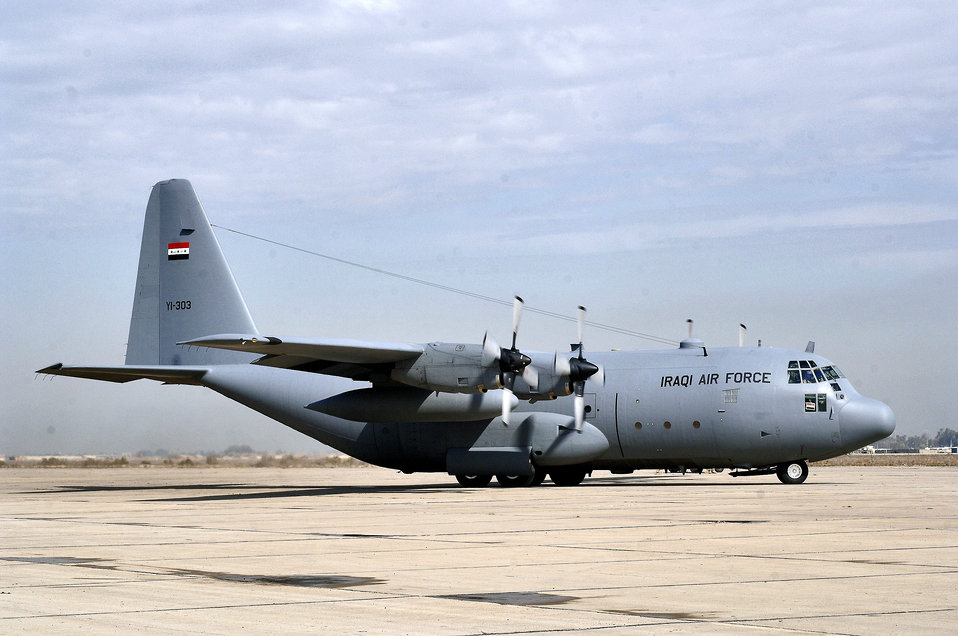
Iraqi Air Force spreads its wings

An Iraqi C-130 Hercules taxis onto the runway shared by Baghdad International Airport and New Al Muthana Air Base, Iraq, Wednesday, Feb. 22, 2006. The aircraft, YI-303, is one of three cargo aircraft at the new air base.